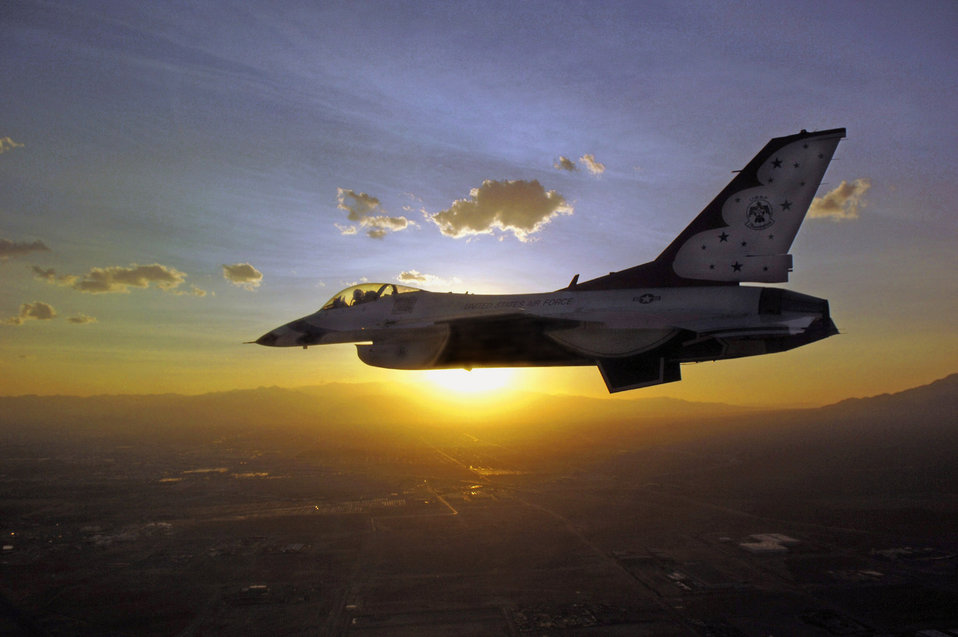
Peaceful beginning

A lone F-16 Fighting Falcon from the U. S. Air Force Thunderbirds flies against the sunrise. The demonstration squadron has recently released its 2009 schedule.